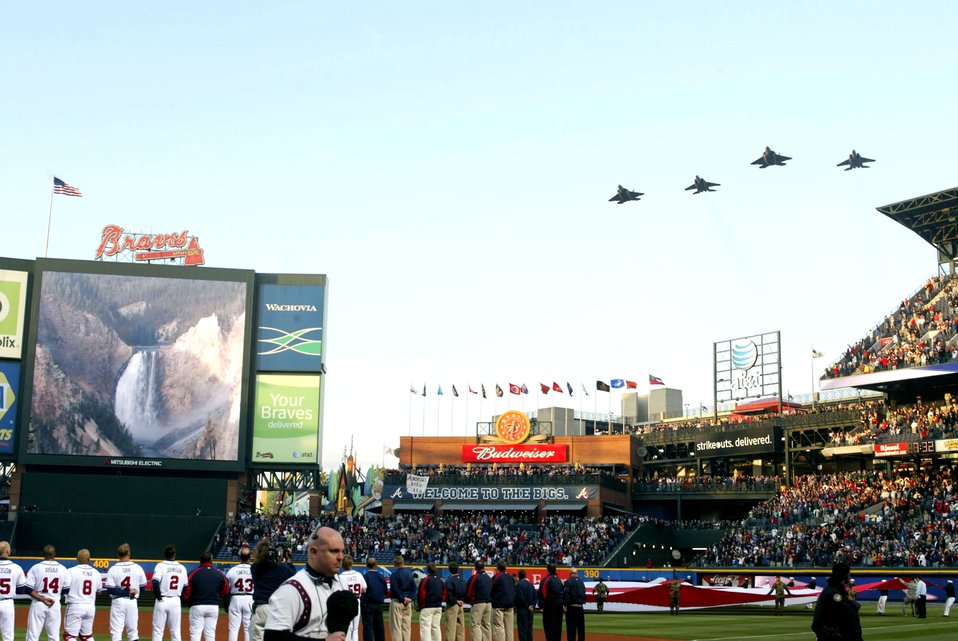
Anniversary baseball begins around the world journey

Air Force jets perform a flyby in celebration of the Atlanta Braves baseball opening day at Turner Field April 6 in Atlanta. Two F-15 Eagles and two F-22 Raptors represent the Heritage to Horizons theme for the Air Force during the performance of the national anthem. The tribute to the Air Force's 60th Anniversary is represented by baseballs that will make a trip around the world and return to Turner Field in September. The Heritage to Horizons events throughout the year all lead up to Atlanta Air Force Week, hosted by Air Force Reserve Command Oct. 8-14.